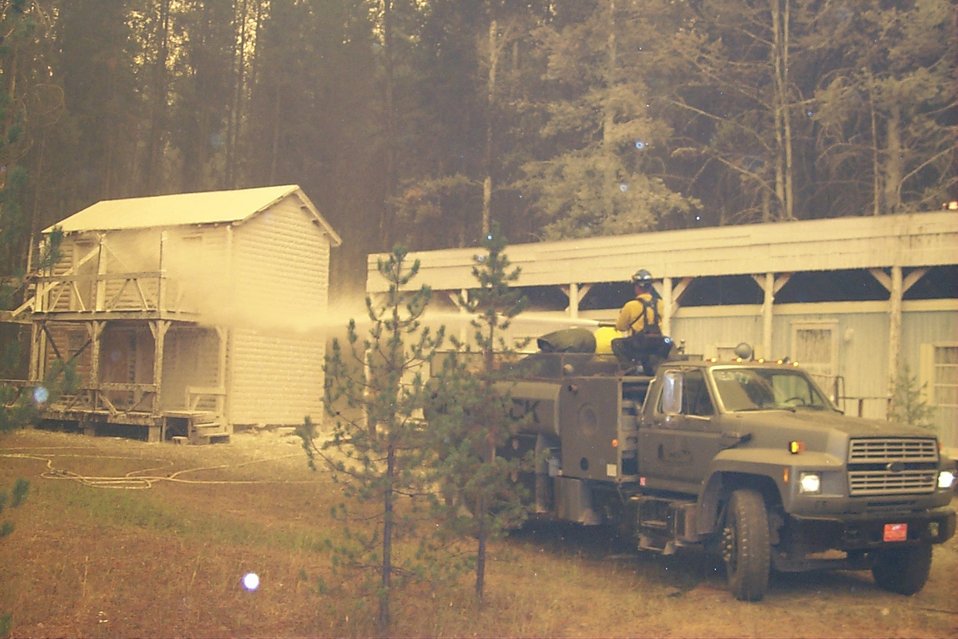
Fire retardant measures Urban interface Fire Clearwater Fire Salmon Field Office USRD Upper Snake River District